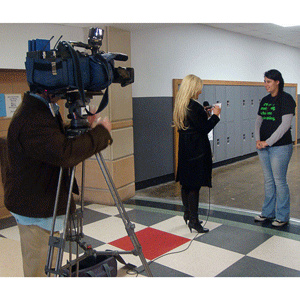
NDFW 2014: Kansas Coverage

Go KFP! Kansas Family Partnership sent a Lawrence High School press release and pitch email about National Drug Facts Week Events to its Lawrence media contacts on Lawrence High School’s activities, the national campaign and KFP’s social media campaign, which resulted in coverage from 6 News Lawrence, KS.